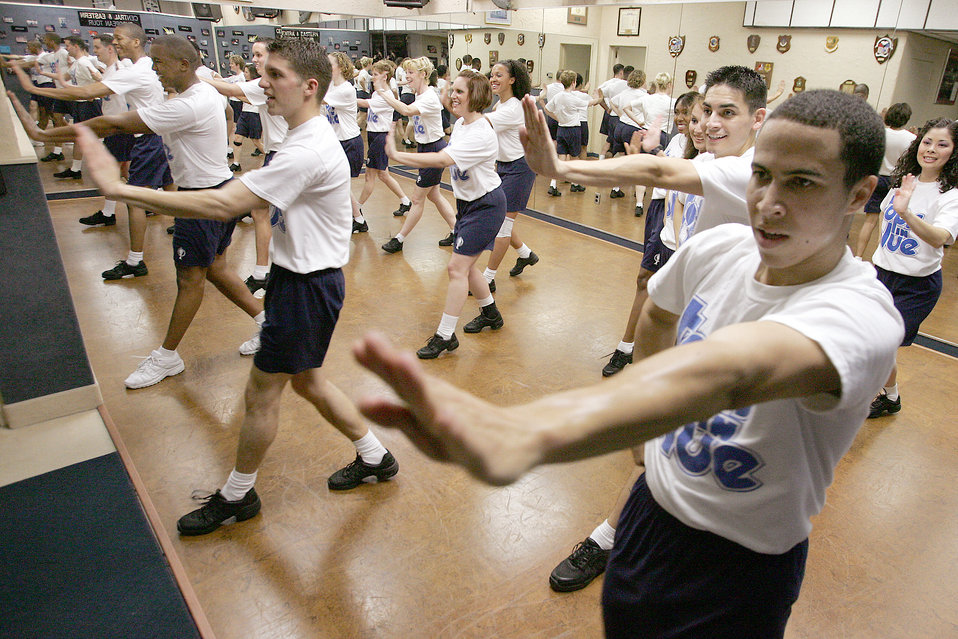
Tops In Blue 2007 rehearses for anniversary season

Tops in Blue 2007 cast members rehearse in their production center Feb. 7 at Lackland Air Force Base, Texas. This year's theme is